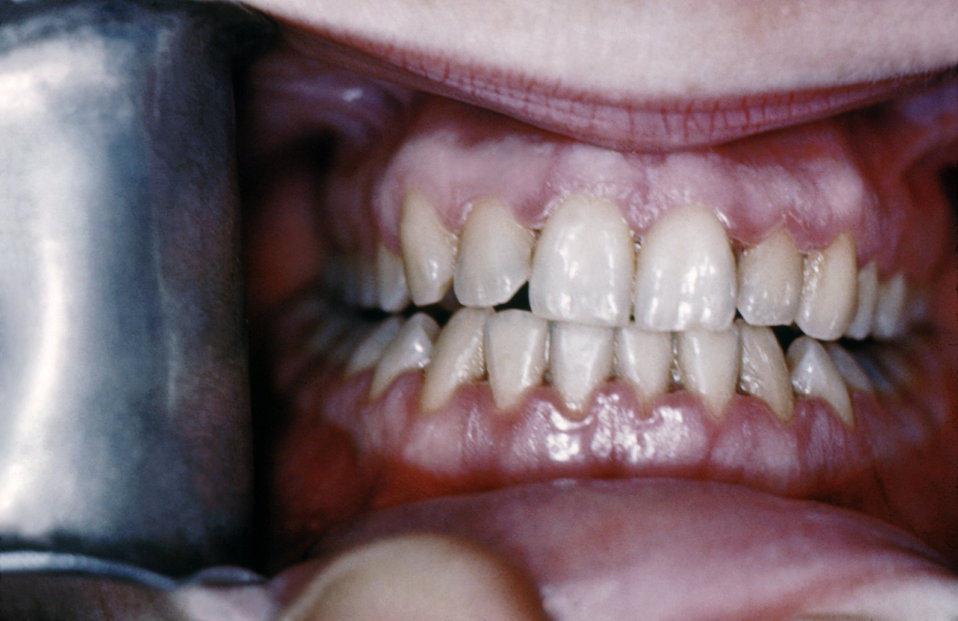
This 1950s photograph depicted an example of acute necrotizing ulcerative gingivitis, also known as 'trench mouth.' The symptoms of this bacterial infection include inflamed, bleeding gums, which if left untreated, progress to large ulcerations on the gums, especially in the areas between the teeth. The ulcers are extremely painful, can cause bad breath, and leave a foul taste in the mouth.